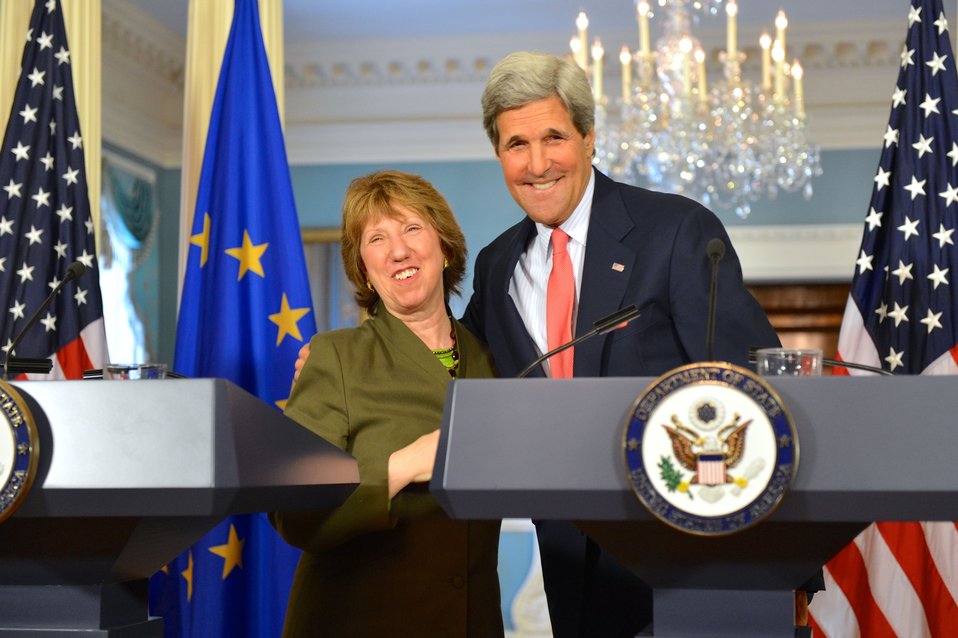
Secretary Kerry and EU High Representative Ashton Share a Laugh After Addressing Reporters

U.S. Secretary of State John Kerry and EU High Representative Lady Catherine Ashton share a laugh after holding a joint press conference at the U.S. Department of State in Washington, D.C., on May 6, 2014.